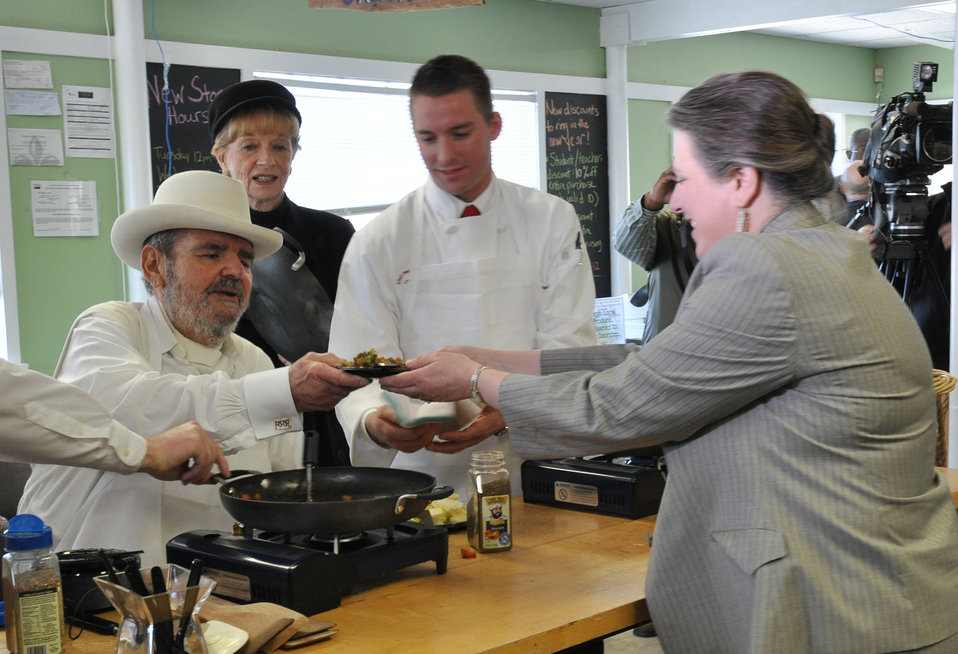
Agriculture Deputy Secretary Kathleen Merrigan and American celebrity Chef Paul Prudhomme visit Hollygrove Farm in New Orleans, LA on Tuesday, Feb. 26, 2013. Deputy Secretary Merrigan and Chef Prudhomme prepare a vegetable plate using local produce to share with community farmers to highlight the strength and resiliency of American agriculture and economic opportunity associated with local and regional food production. Deputy Secretary Merrigan announced a new U.S. Department of Agriculture (USDA) report that highlights new economic opportunities for farmers and ranchers by utilizing food hubs to aggregate their product and USDA’s commitment to increasing economic opportunities for local farmers and ranchers while expanding access to fresh, local foods.